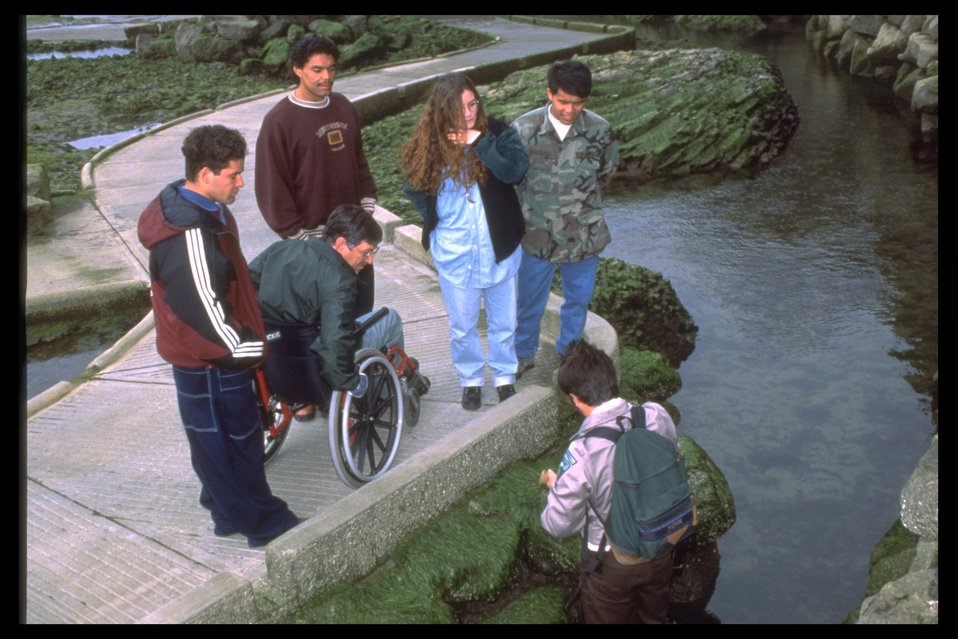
Man in wheel chair at Quarry Cove tidepools with BLM employee Ed White.